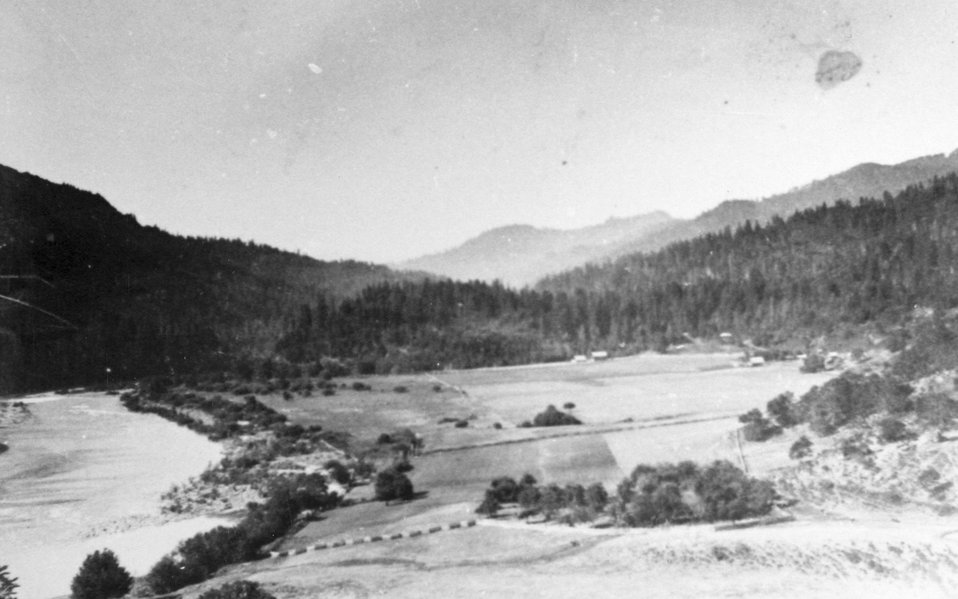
Big Bend Ranch